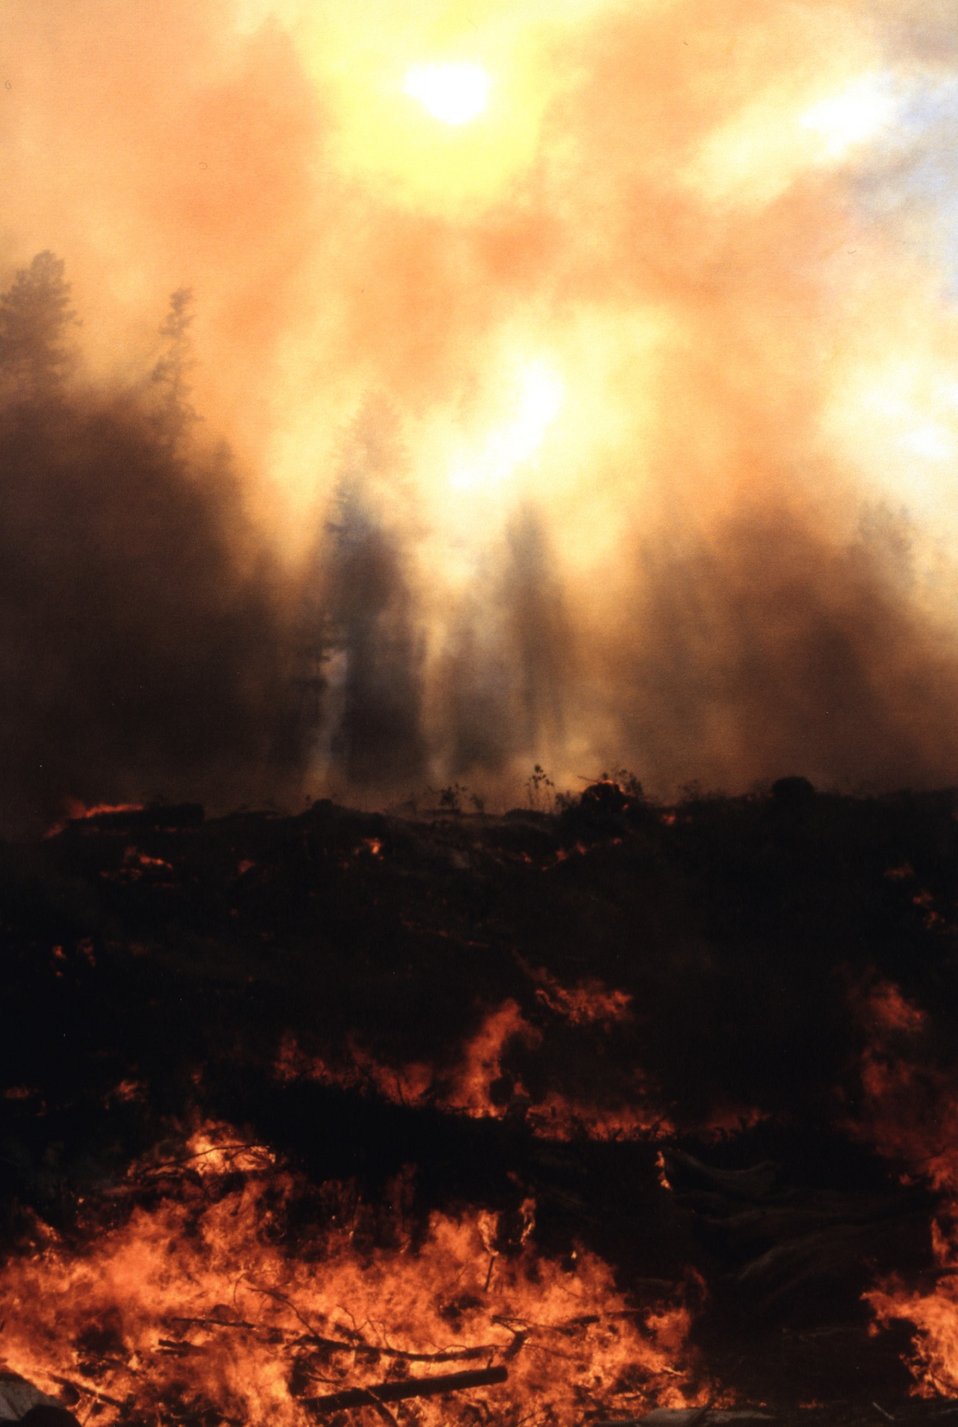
Controlled burn on Morine Creek, Jackson Co. Terry Tuttle, Medford ArtHM